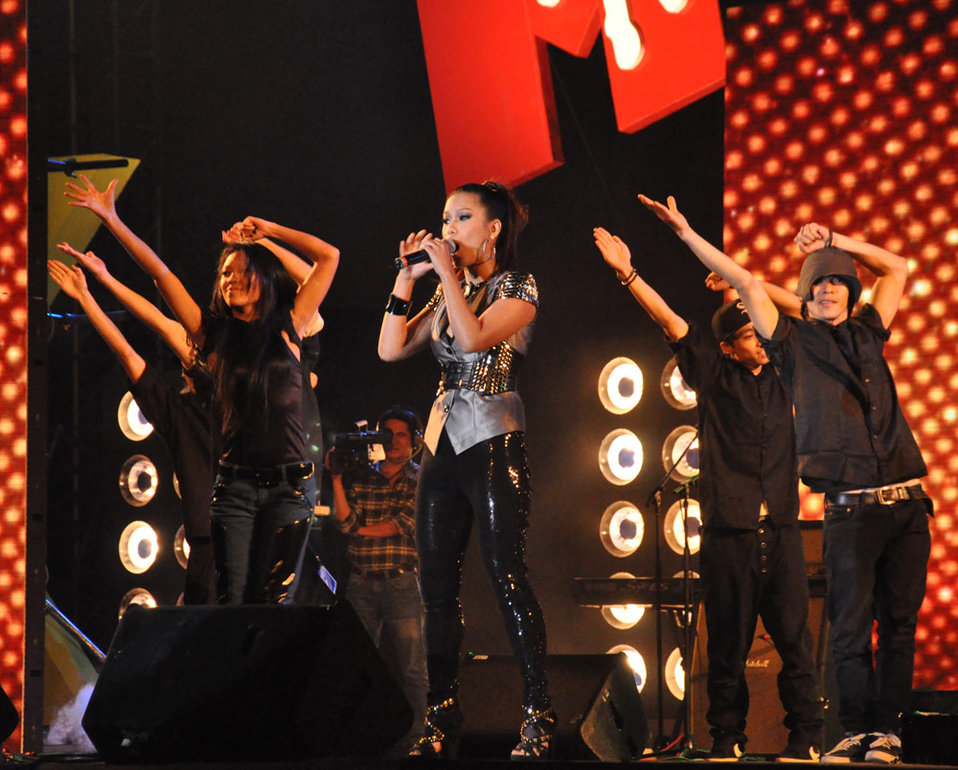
USAID Vietnam and MTVEXIT against Human Trafficking

Hanoi concert, March 27, 2010